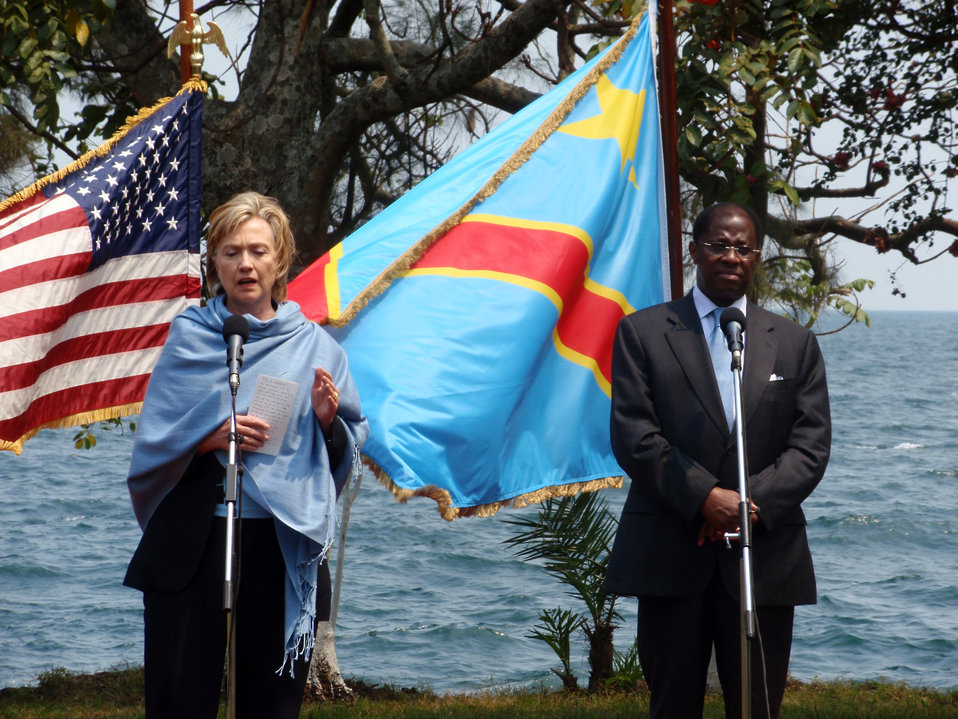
Secretary Clinton Conducts Press Availability With D.R.C. Foreign Minister

U.S. Secretary of State Hillary Rodham Clinton and Democratic Republic of Congo Foreign Minister conduct a press availability in Goma, Democratic Republic of the Congo August 11, 2009.